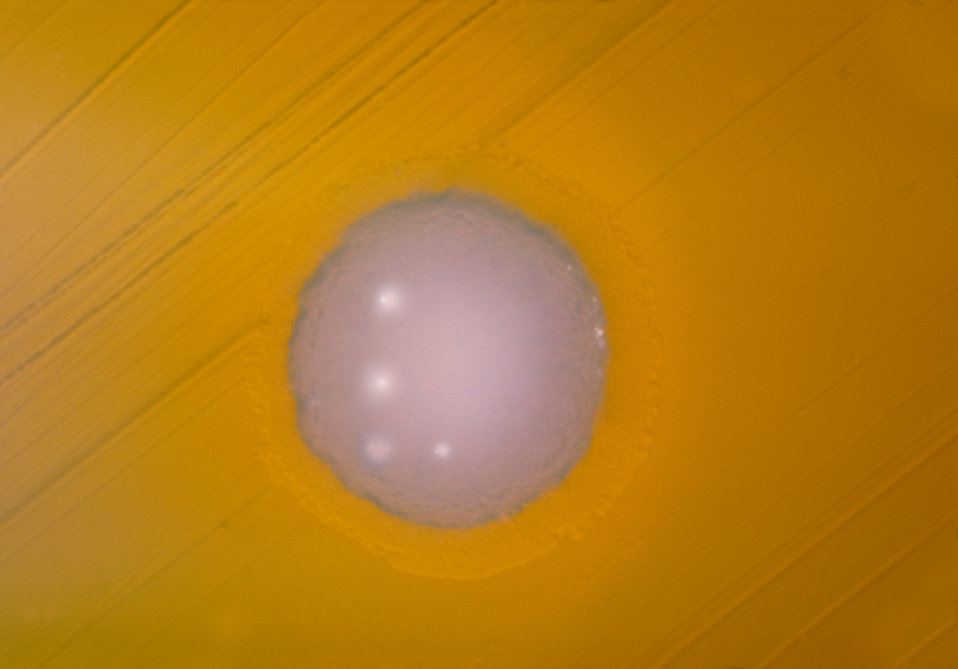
A BHI agar plate culture of Actinomyces sp., strain X-573, at 10 days.